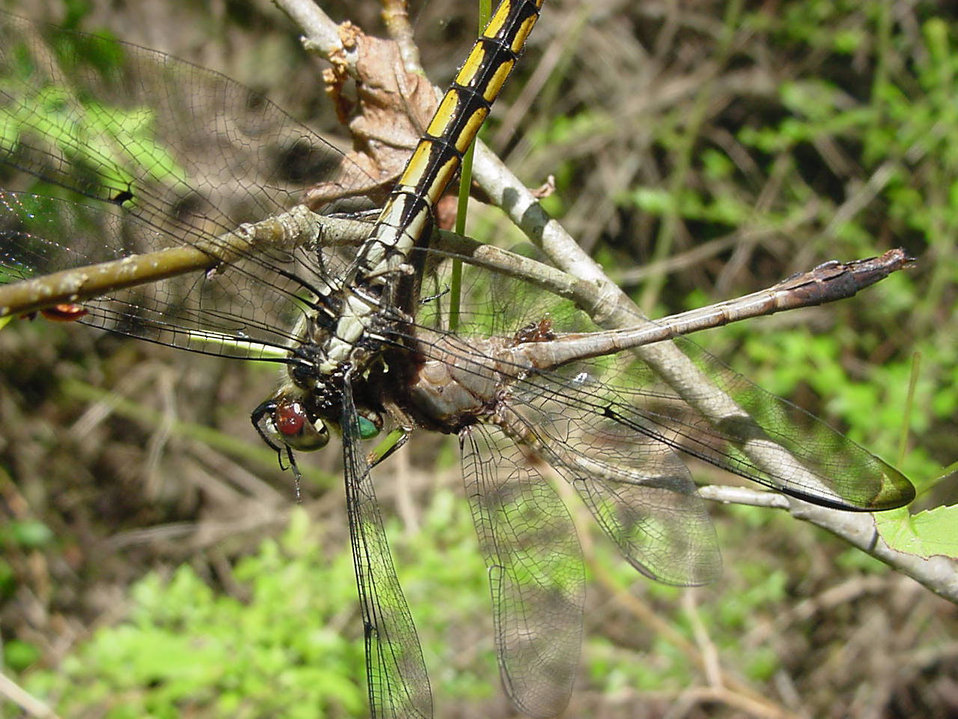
Dragon vs dragon